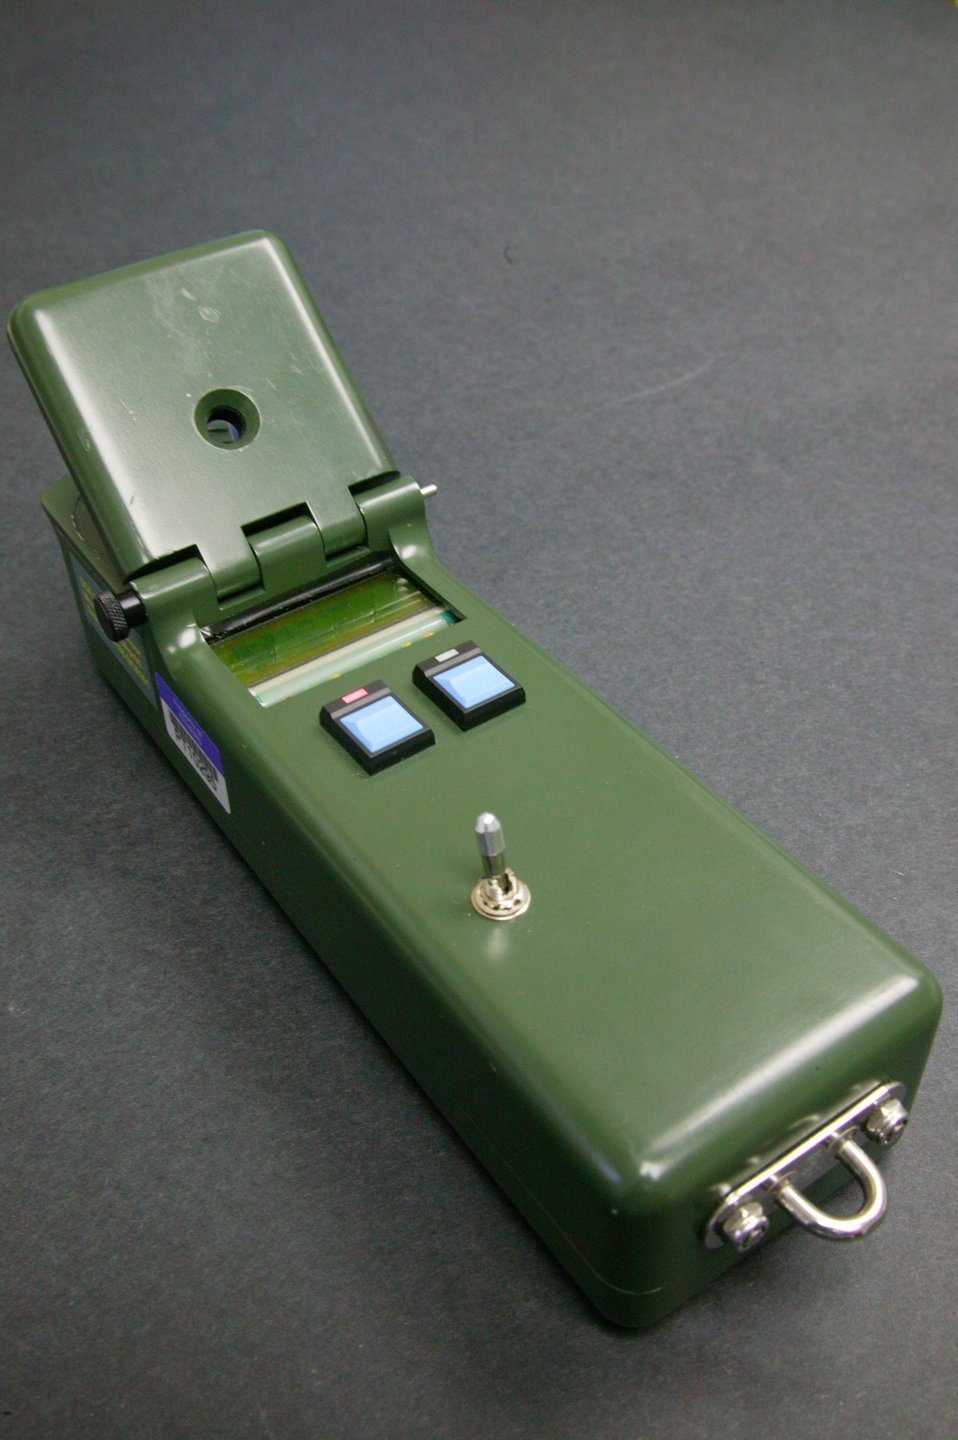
The DNA capture elements instrument was developed at the Pacific Northwest National Laboratory for the Air Force Research Laboratory.

The DNA capture element instrument or glove box is used to process sample of agents in a matter of minutes to determine if they are or are not harmful. The box uses an Air Force-developed biochemical assay based on aptamers or single-chain DNA fragments. The DNA capture element was developed by researchers at PNNL.